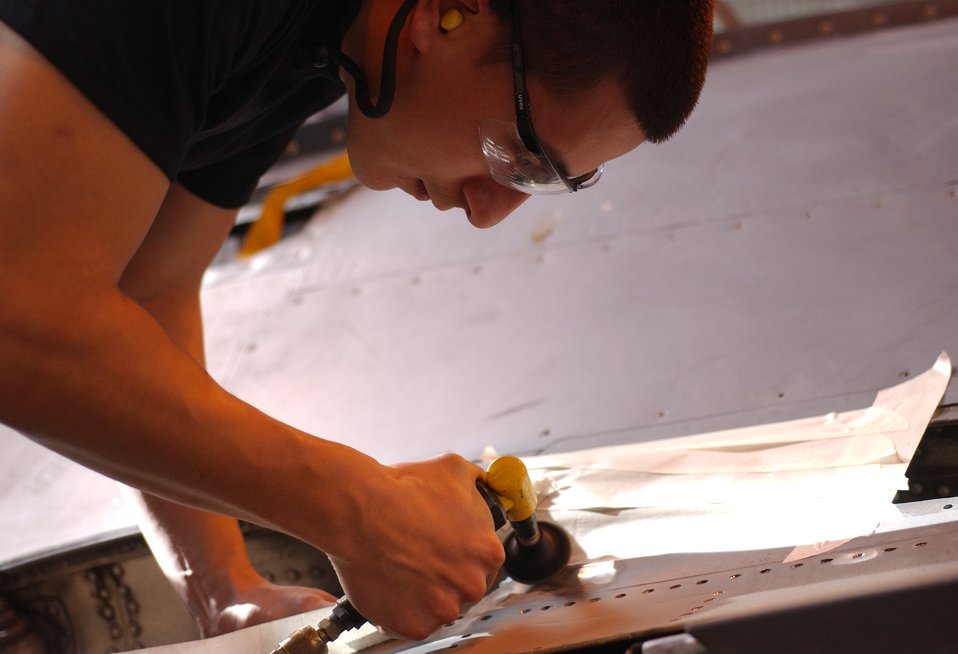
AGE troop

AVIANO AIR BASE, Italy -- Airman 1st Class Oscar Ramos polishes equipment on an F-16 Fighting Falcon here March 9. He is an aircraft gound equipment Airman with the 31st Maintenance Squadron.